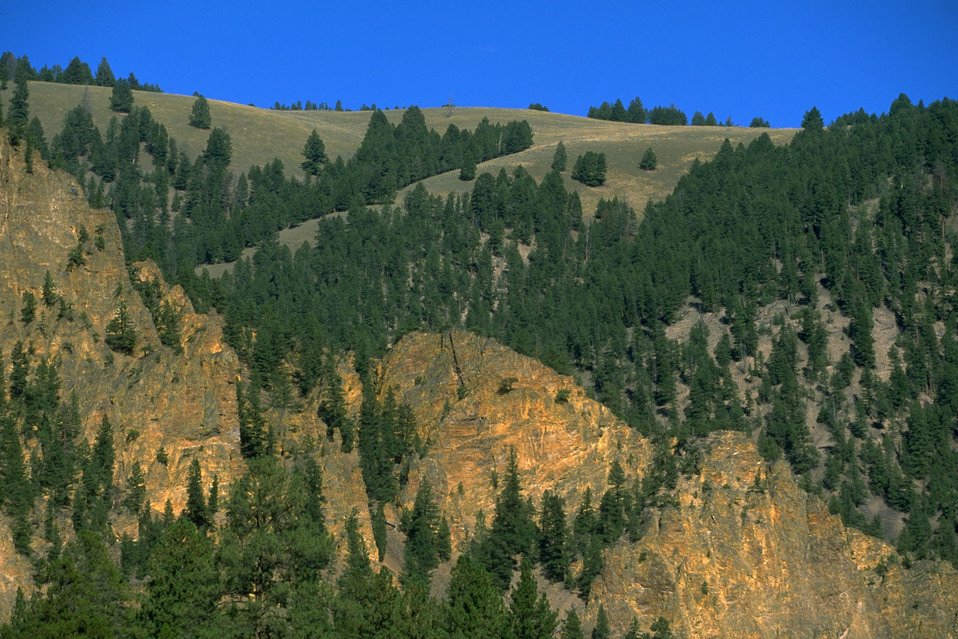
Squaw Rock ACEC (area of critical environmental concern)